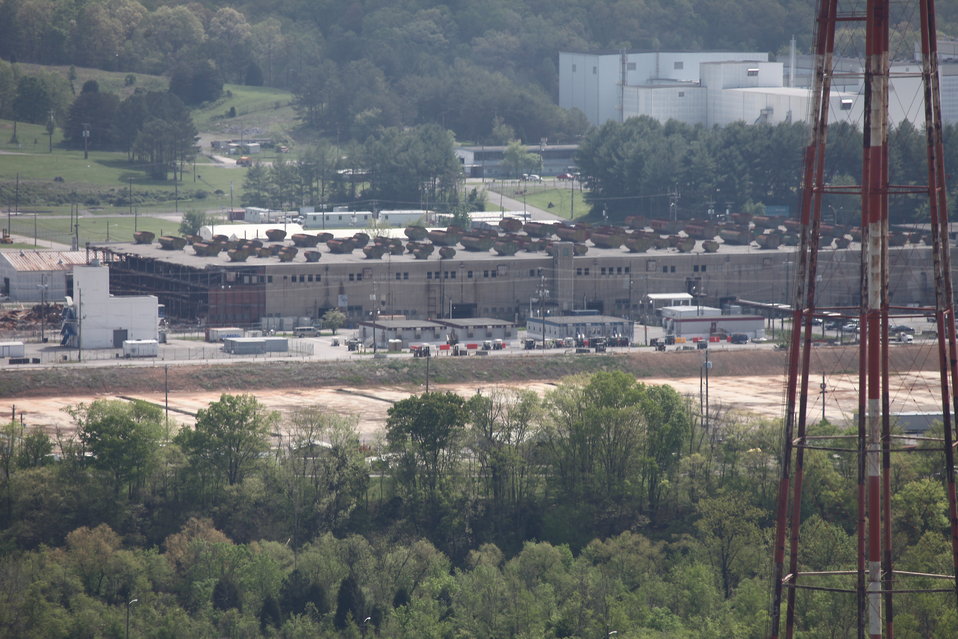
ETTP